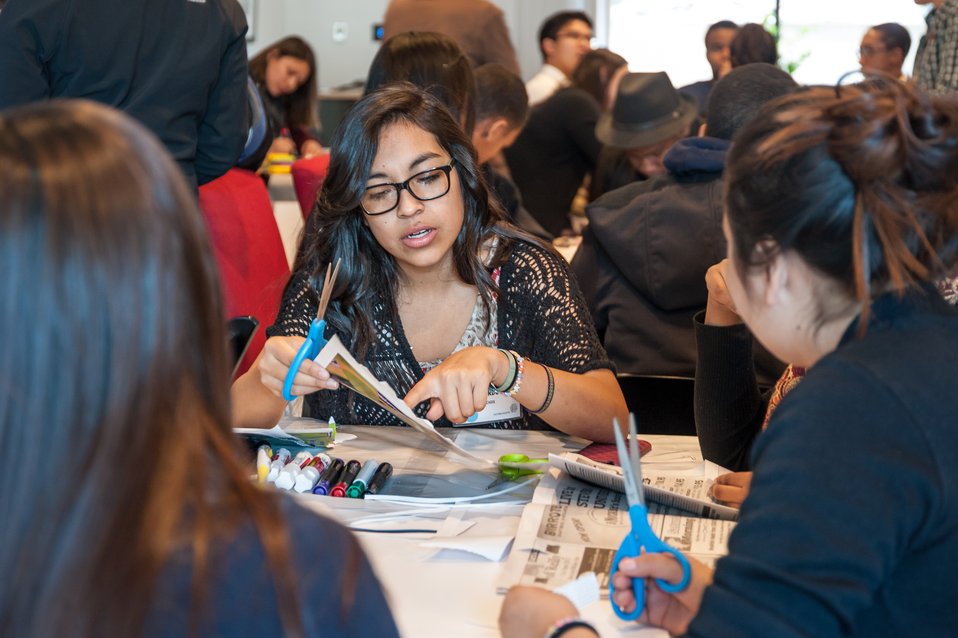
Mentor NDFW Event 2014

Mentor Foundation USA, in partnership with the National Institute on Drug Abuse (NIDA) and other key partners hosted a Youth Drug Facts Rally at the House of Sweden on Thursday, 30th January 2014. Approximately 200 students from five local high schools attended and had the opportunity to interact with top U.S. scientific experts and inspiring guest speakers to “shatter the myths” about drugs and substance abuse, while pledging to stay drug-free.